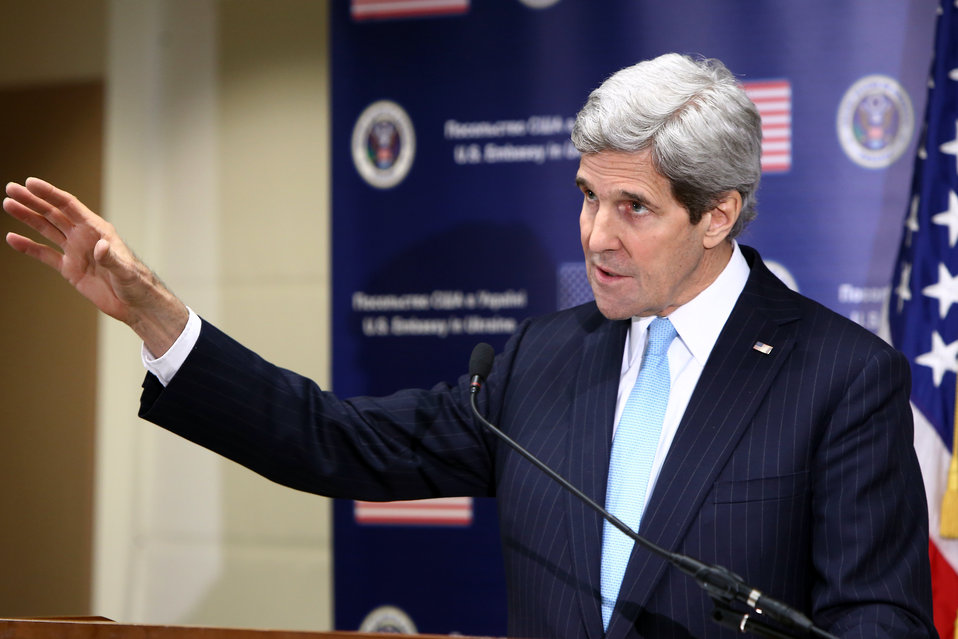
Secretary Kerry Addresses Reporters in Kyiv, Ukraine

U.S. Secretary of State John Kerry addresses reporters at the U.S. Embassy in Kyiv, Ukraine, on March 4, 2014.